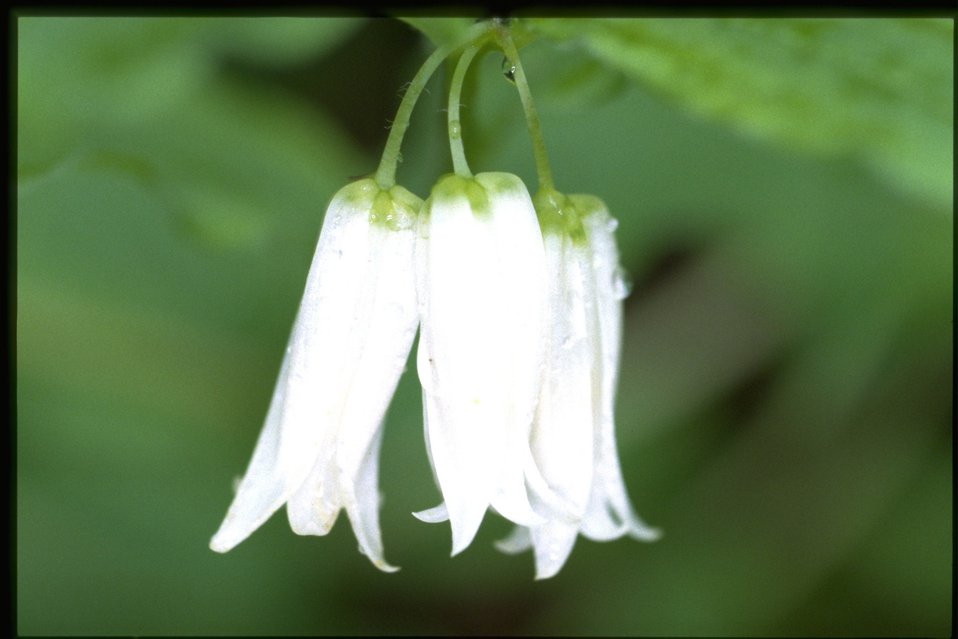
Closeup shot of Disporum smithii.